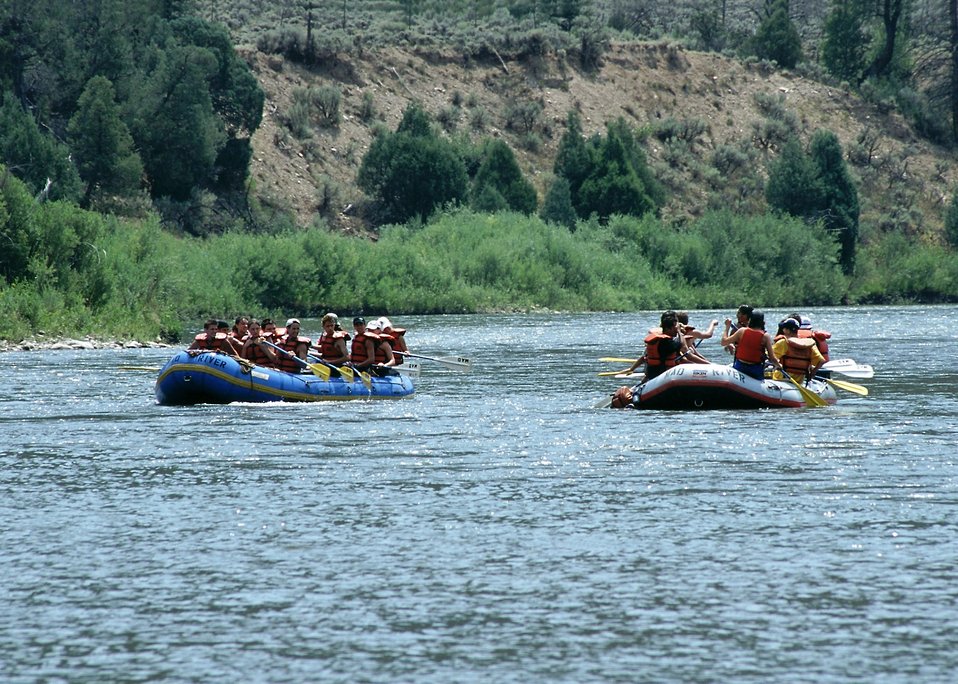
Radium Launch